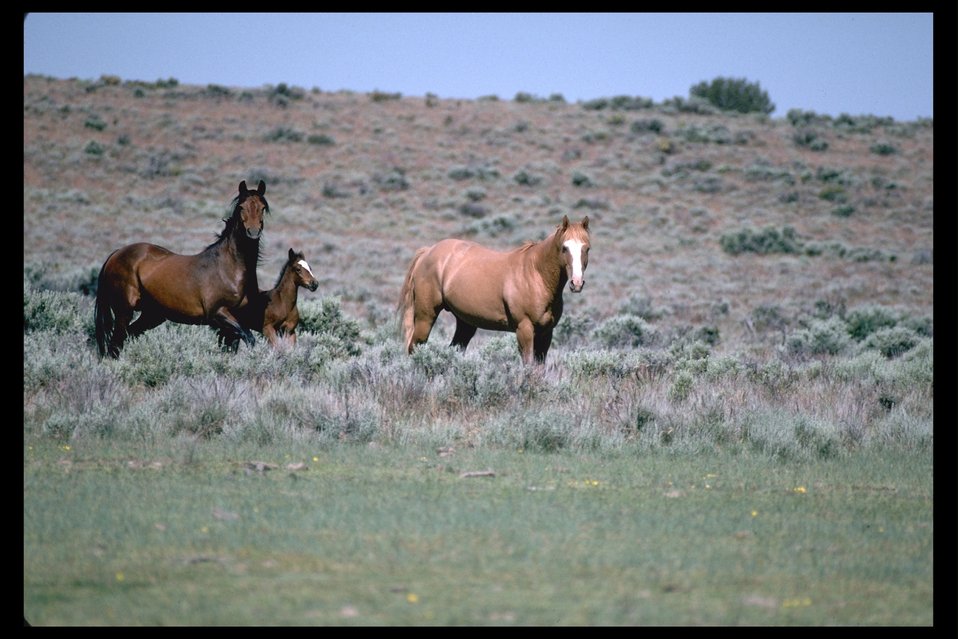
Lazarus" and part of his band in West Warm Springs HMA.